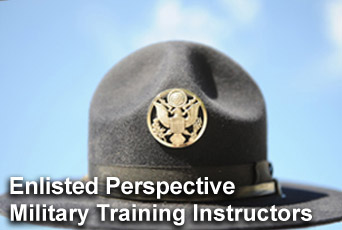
'Perspective' features military training instructor duty

In his latest